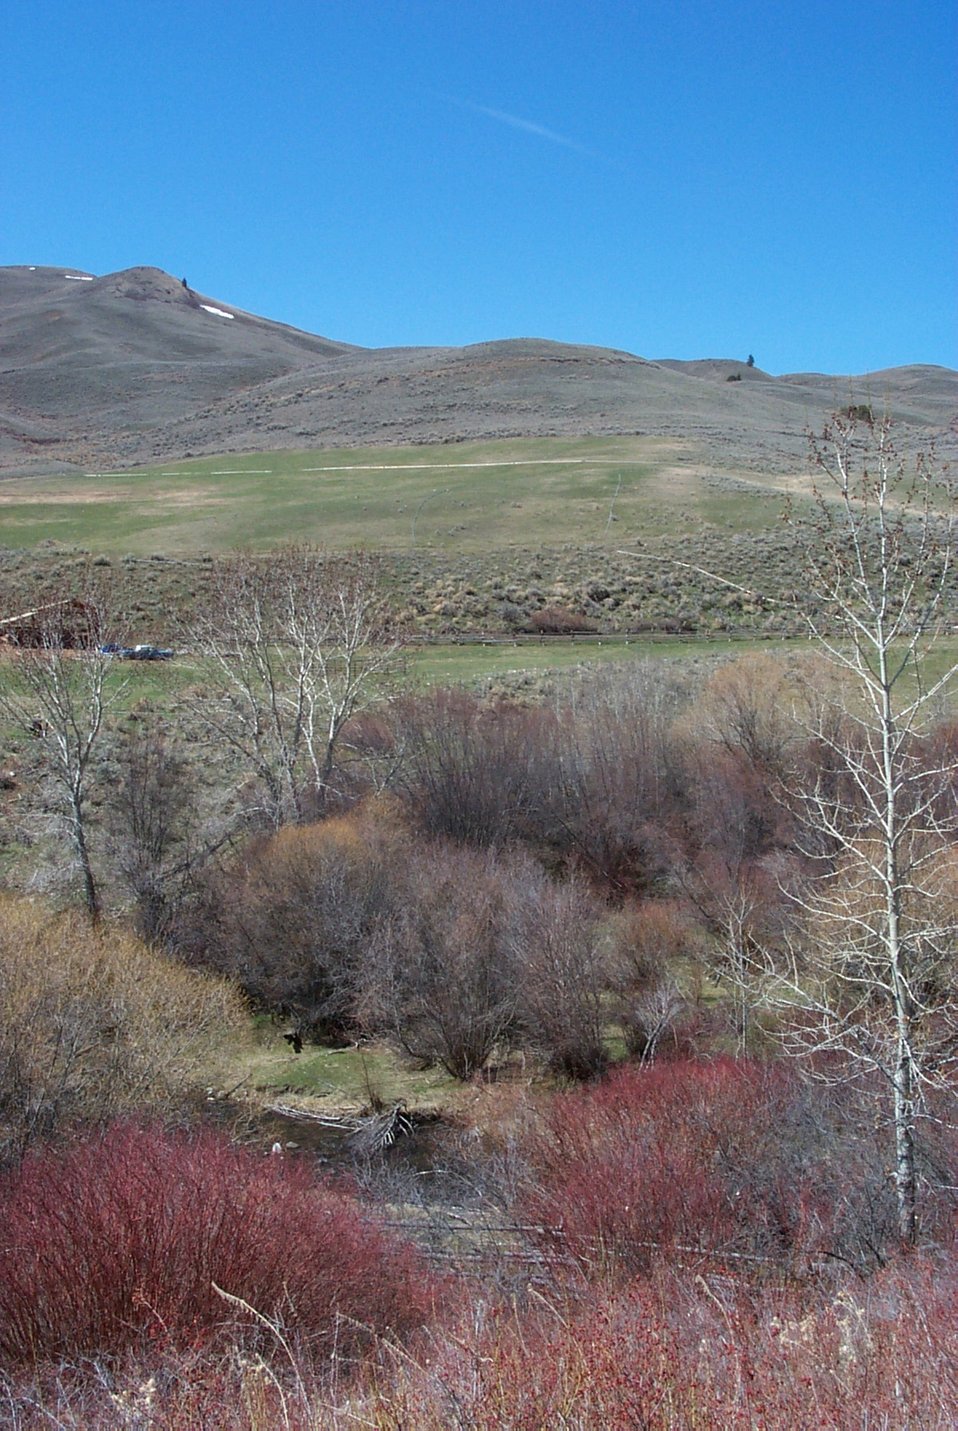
Salmon Field Office Realty Public access Exchange UCSC Upper Columbia Salmon Clearwater District